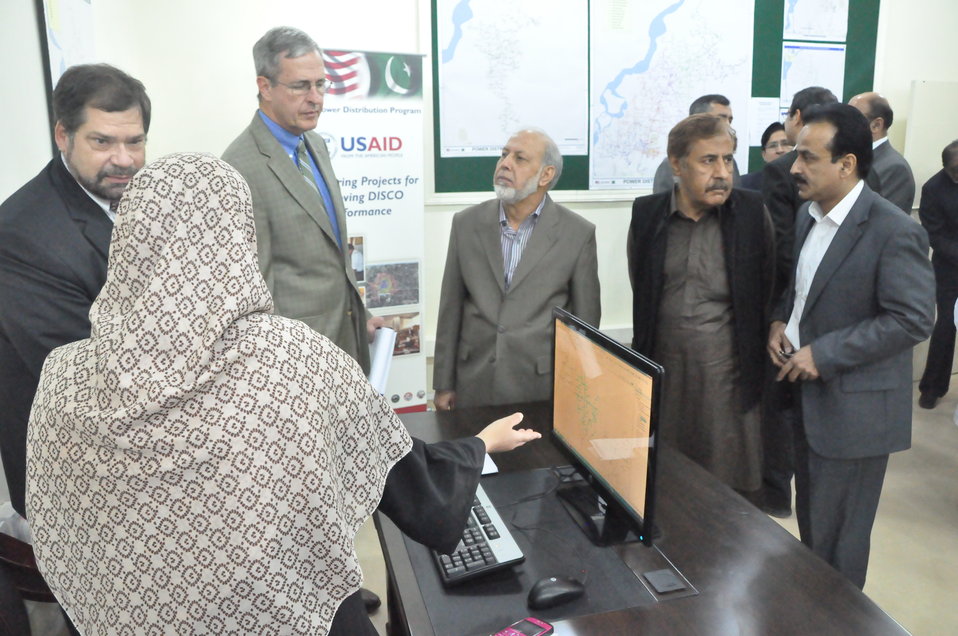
USAID equips MEPCO with state-of-the-art Planning and Engineering Computer Center

USAID Pakistan Mission Director, Jonathan Conly being briefed about the new digitized mappings generated using new planning and engineering tools.